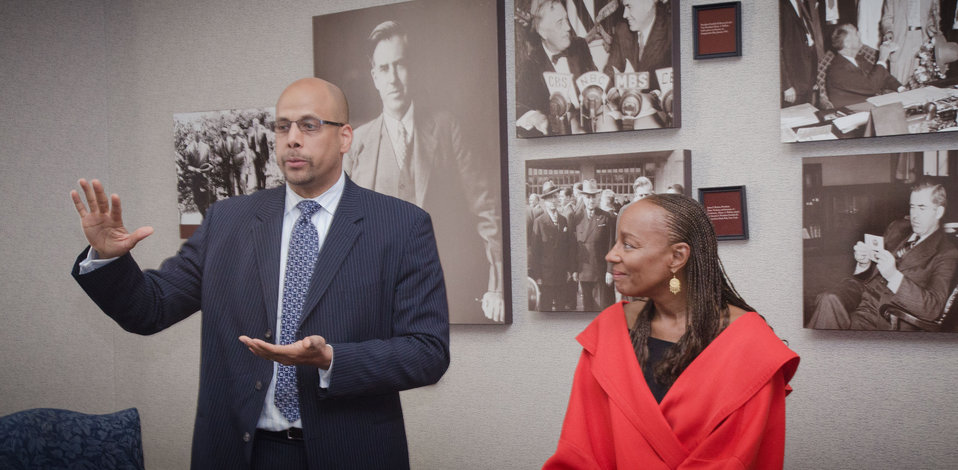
Department of Education Assistant Deputy Secretary James H. Shelton, made comments during a meeting with National CARES Mentoring Movement founder and Editor-in-Chief Emeritus, Essence magazine, Susan Taylor (right), met for a cross-departmental discussion with Department of Agriculture and Department of Energy personnel in the Whitten Building, U.S. Department of Agriculture, in Washington, D.C., on Tuesday, February 28, 2012. This not-for-profit organization is dedicated to recruiting and connecting mentors with local youth and mentoring organizations to help guide under-resourced children to academic and social success across the country. This discussion provided a continuation of the White House Policy in Action conference that took place in November 2011. The focus of the discussion was about how existing federal programs and administration priorities can be leveraged with her organization, especially as it relates to, science, technology, engineering and mathematics (STEM) literacy, education and rural youth.